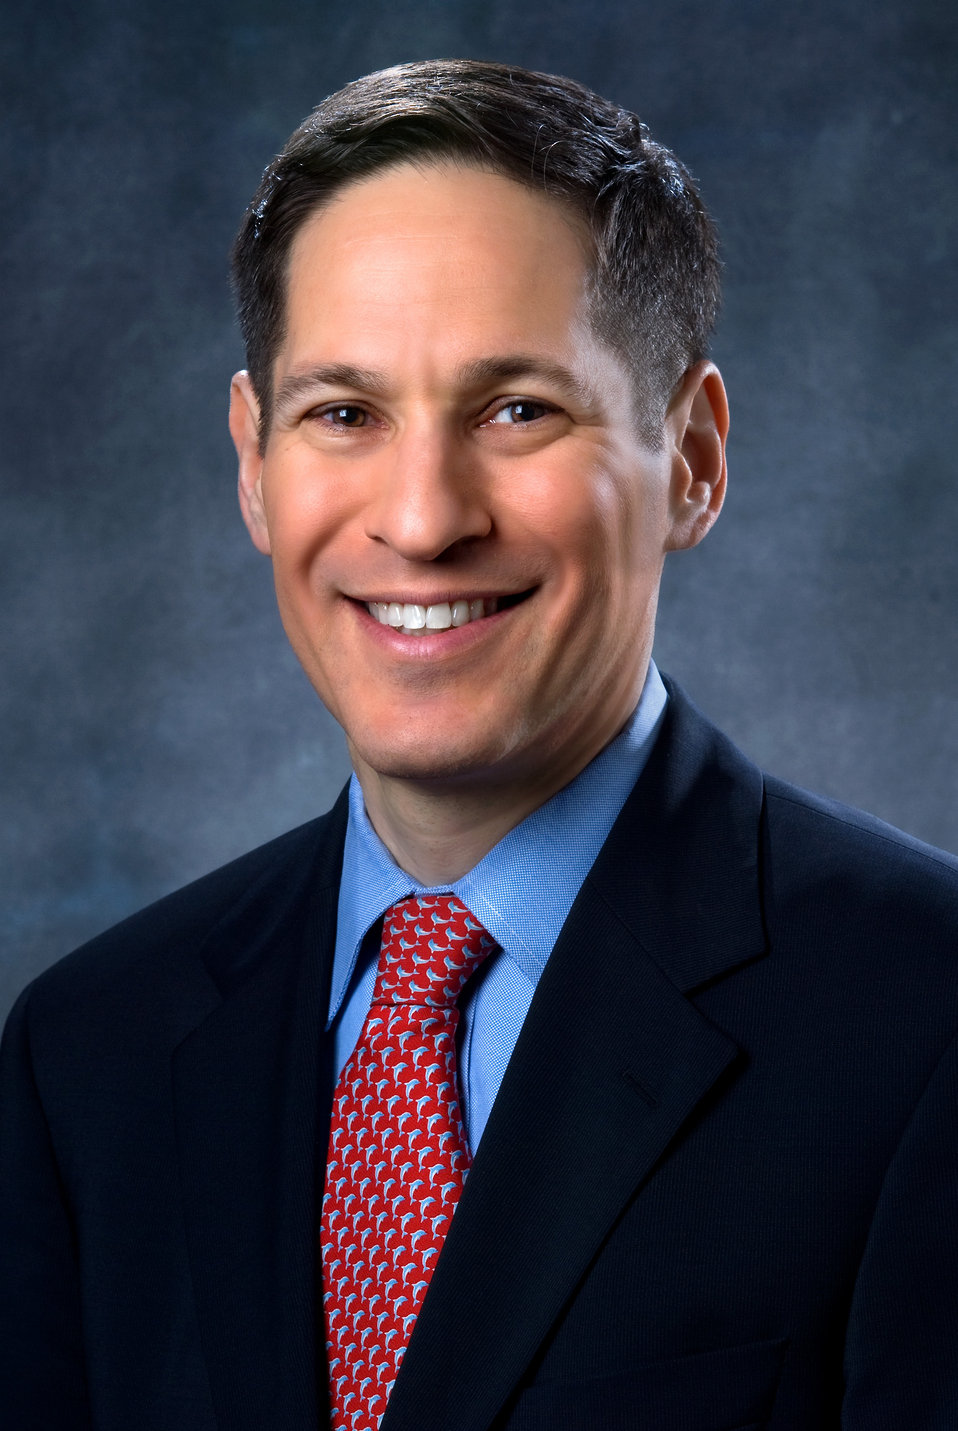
This 2009 photograph depicted Centers for Disease Control and Prevention (CDC) Director Thomas R. Frieden, M.D., M.P.H. Thomas R. Frieden, MD, MPH, became Director of the Centers for Disease Control and Prevention (CDC) and Administrator of the Agency for Toxic Substances and Disease Registry (ATSDR) in June 2009.Previously, he served as Commissioner of the New York City Department of Health and Mental Hygiene since January 2002. During his tenure, the number of smokers declined by 350,000, teen smoking decreased by half, and New York City became the first place in the United States to eliminate trans-fats from restaurants, rigorously monitor the diabetes epidemic, and require certain restaurants to post calorie information prominently. Under Dr. Frieden's leadership, the department established the largest community electronic health records project in the country. Dr. Frieden also chairs the New York City Board of Health.